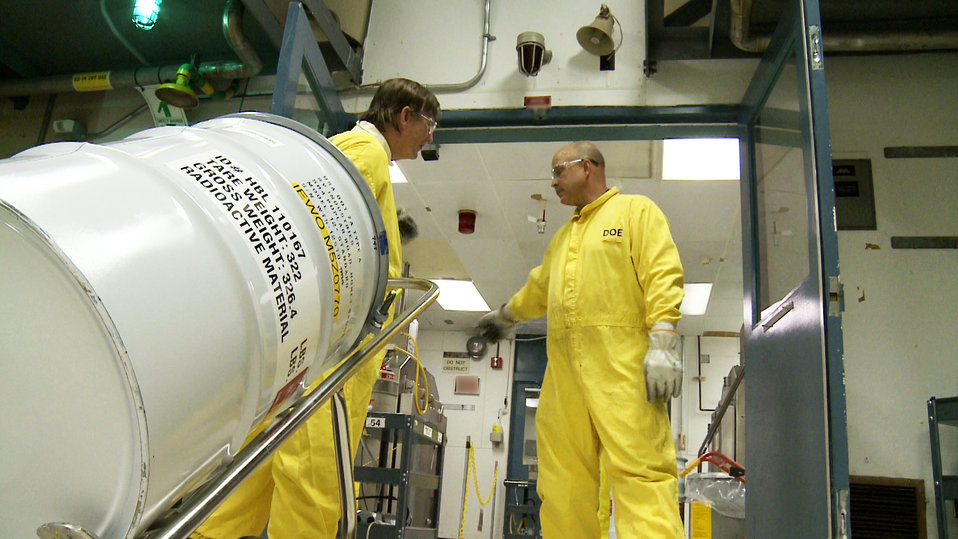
SRS H Canyon

Savannah River Nuclear Solutions employees relocate a pipe overpack container used to transport small amounts of excess plutonium (Pu) oxide destined for long-term storage at the Waste Isolation Pilot Plant in Carlsbad, New Mexico. H Canyon has enough Pu oxide to safely fill approximately 600 of the containers during the current campaign, and potentially thousands more in the future.